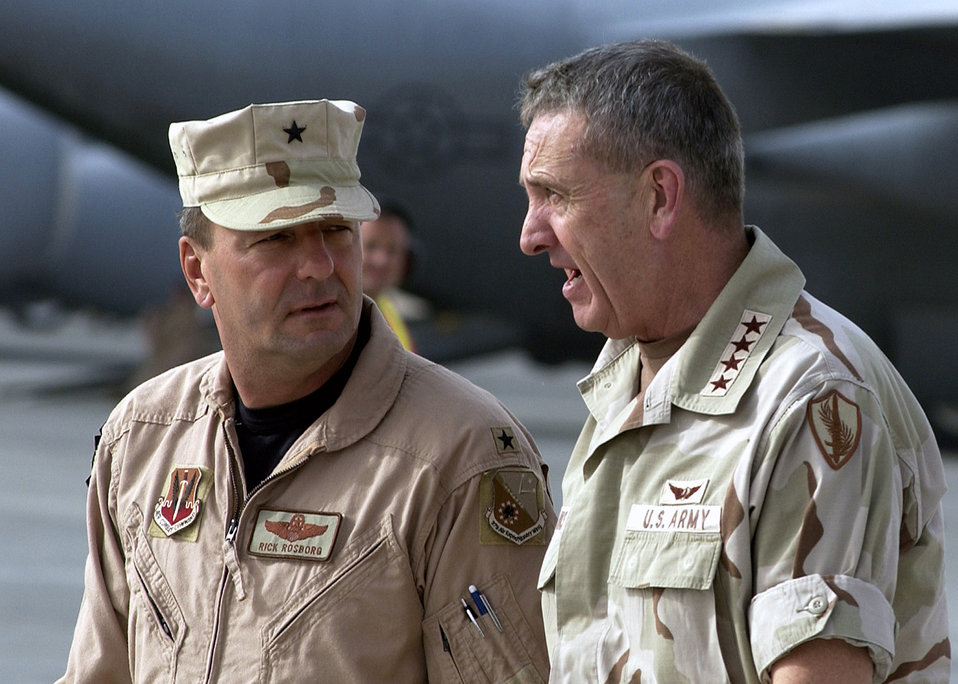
Franks visit

OPERATION IRAQI FREEDOM -- Army Gen. Tommy Franks (right) talks with Brig. Gen. Rick Rosborg after arriving at a forward-deployed location April 16. Franks, who commands U.S. Central Command and Operation Iraqi Freedom, met the commander of the 379th Air Expeditionary Wing at the desert air base in the Middle East. Franks travels throughout the theatre in a C-40B aircraft from Andrews Air Force Base, Md.